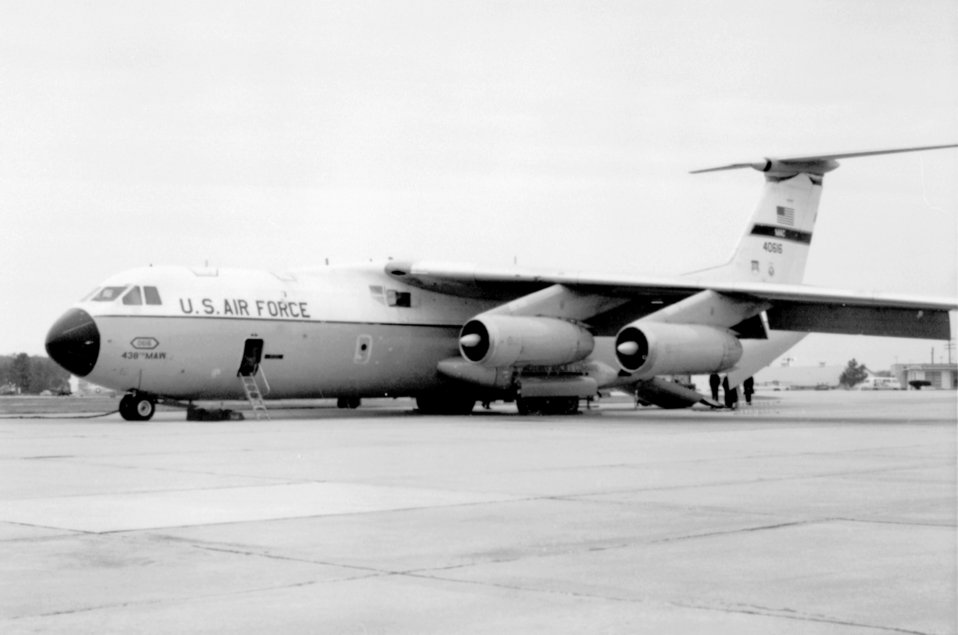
This 1976 image shows an Air Force plane carrying the Lunar Receiving Station, landing at Dobbins Air Force Base.